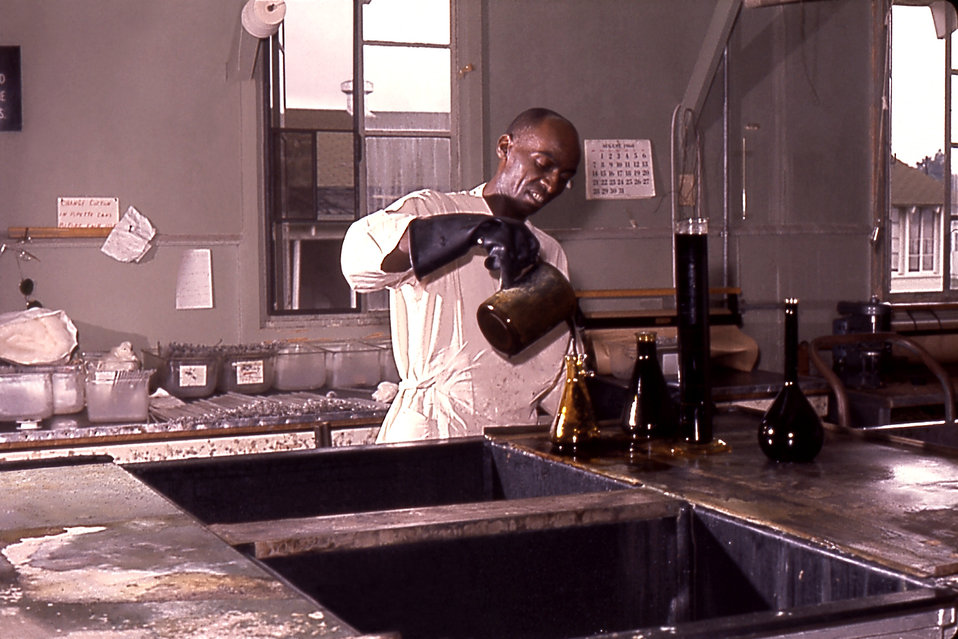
In this 1960 photograph a Centers for Disease Control lab technician was shown maintaining acid vats at one of CDC's lab facilities in Chamblee, Georgia.